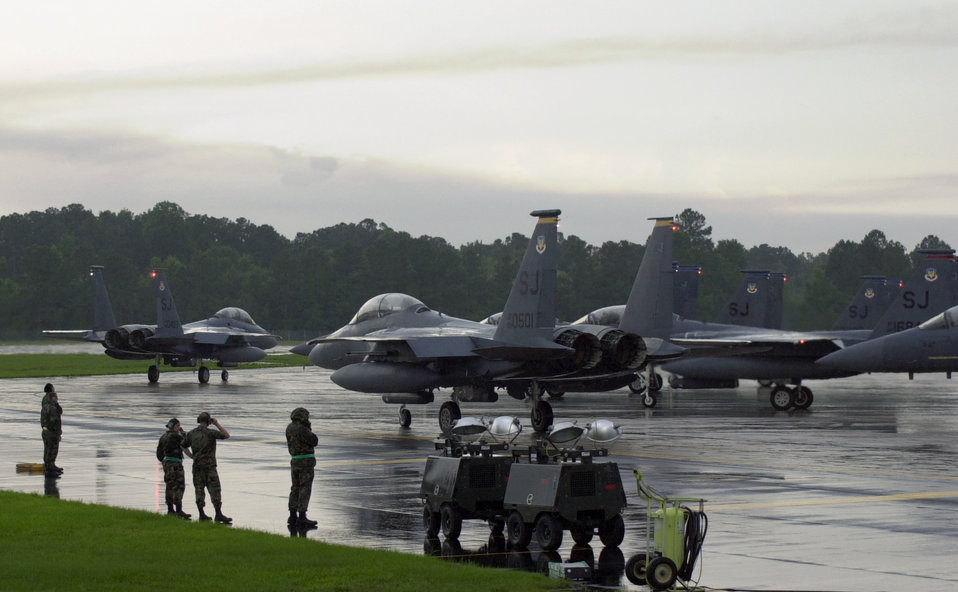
President Ronald Reagan's funeral procession

SEYMOUR JOHNSON AIR FORCE BASE, N.C. (AFPN) -- F-15E Strike Eagle pilots from the 4th Fighter Wing here prepare to takeoff for Washington to perform a 21-ship flyover and a missing-man formation tribute for former President Ronald Reagan's funeral procession.